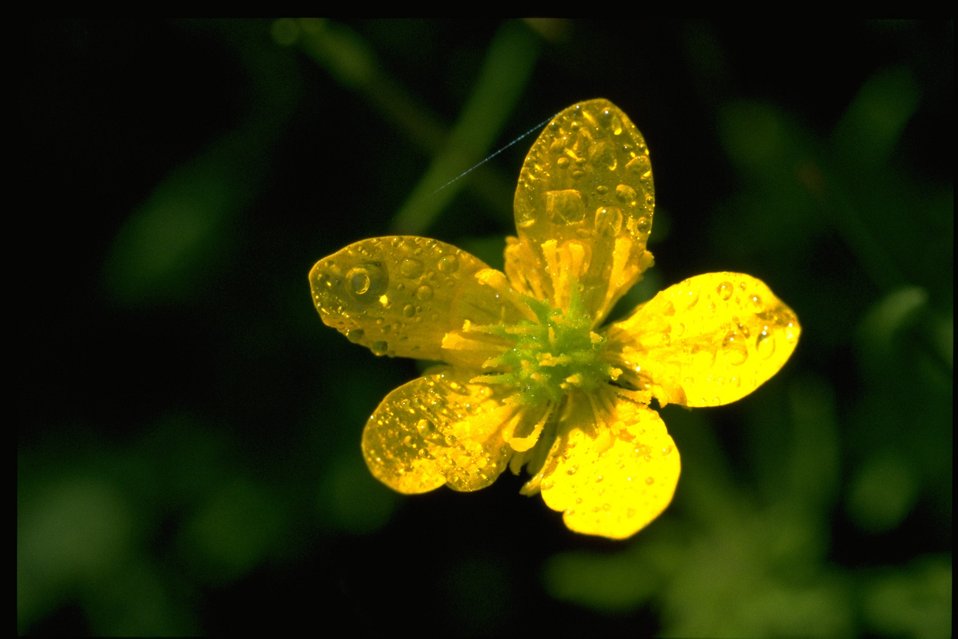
Medium shot of Ranunculus.